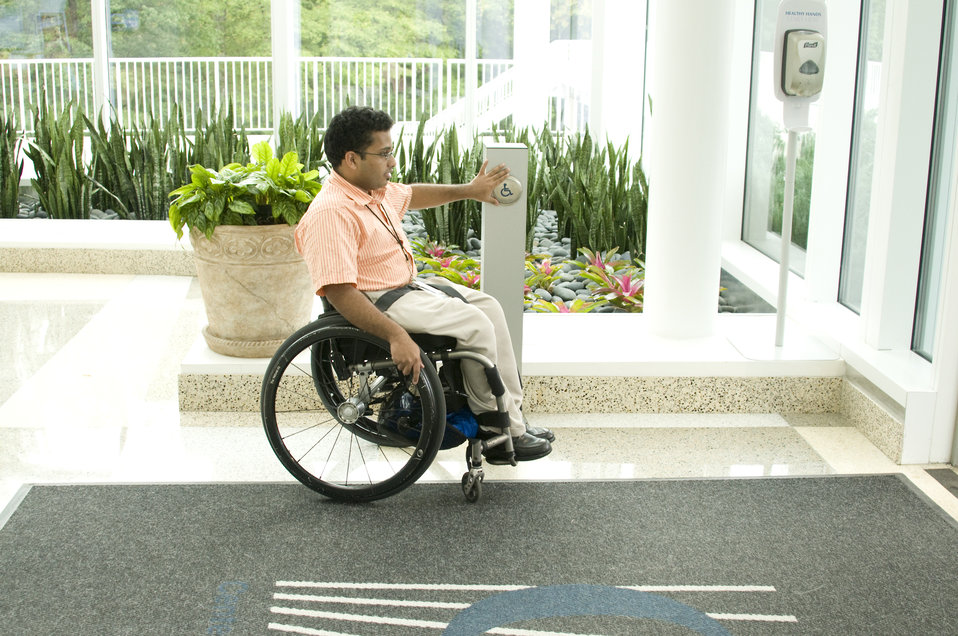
The man depicted here, was seated in his wheelchair, and was in the process of exiting one of the Centers for Disease Control's (CDC) Atlanta, Georgia facilities. Here he was pressing the easily-accessible push pad, which would open the building's mechanized door, providing an unimpeded exit. Note the electronically-controlled hand sanitizer dispenser located at the doorway where both newcomers, and those exiting the building could access this product.